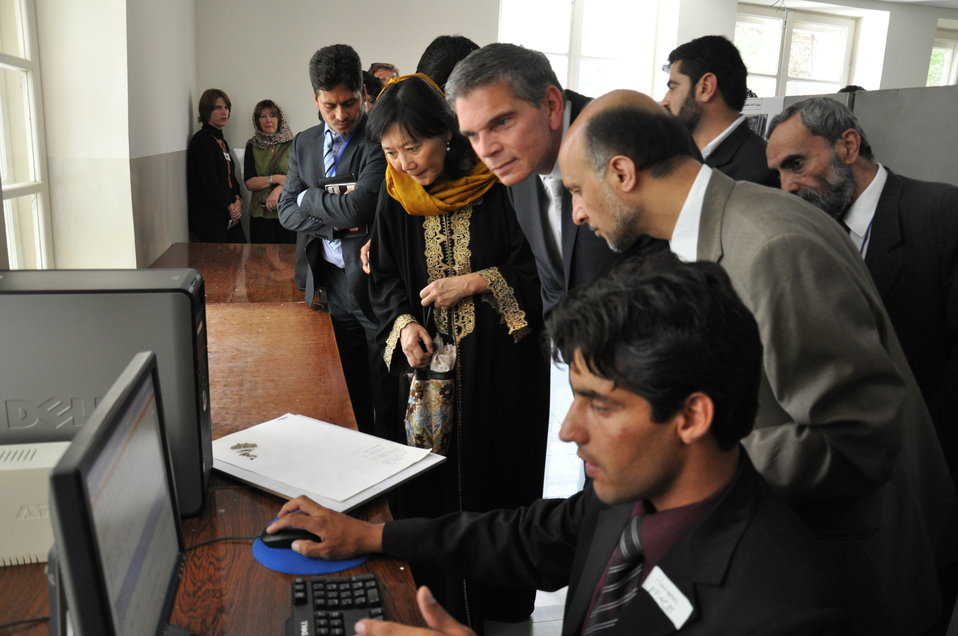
Kabul University Herbarium